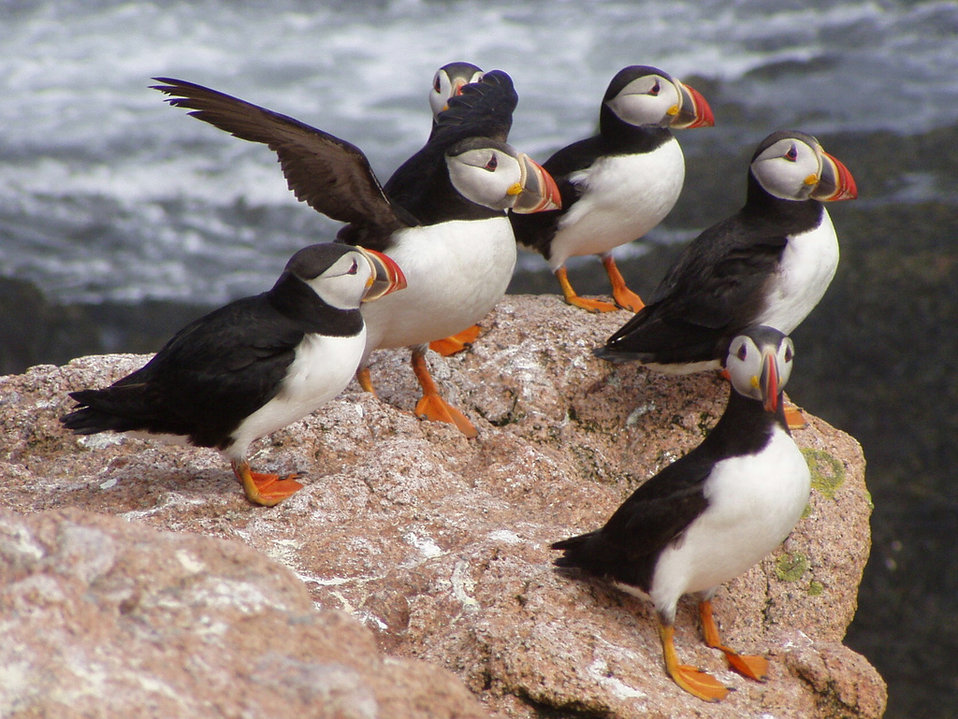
Atlantic puffins

Maine Coastal Islands National Wildlife Refuge, ME